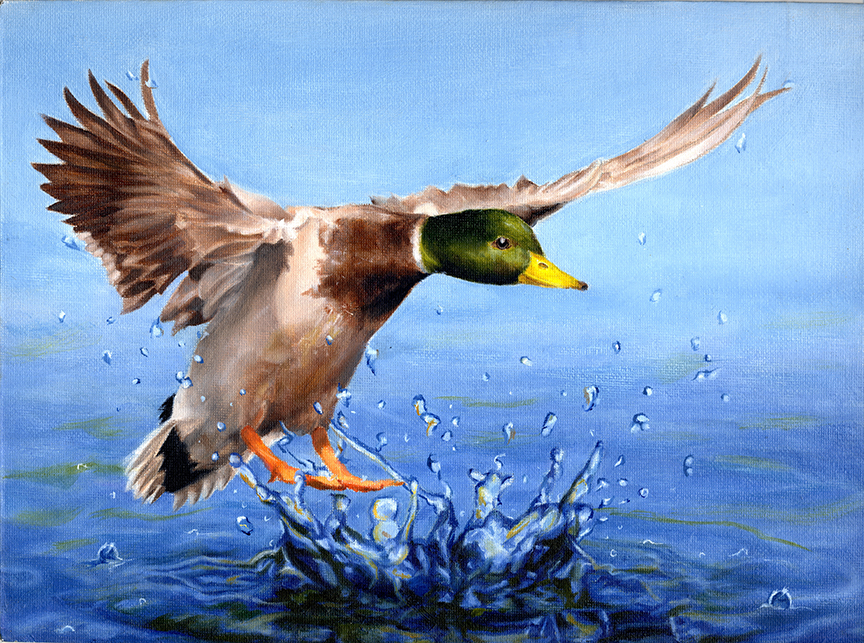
JRDuck2013IL

2013 Junior Duck Stamp Best of Show-Illinois